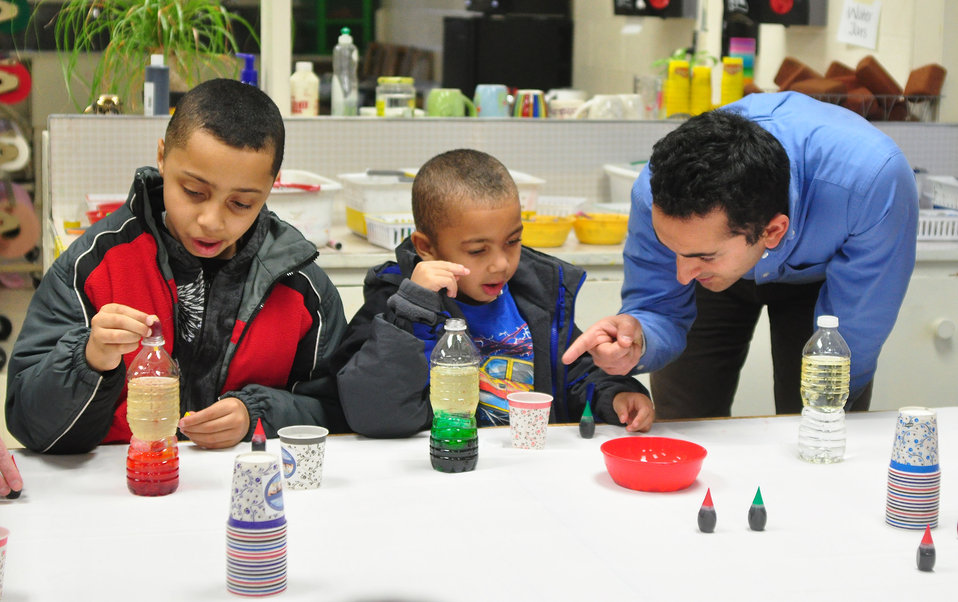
Woodland School STEM Night Oak Ridge 2014

14-013 DOE photo Lynn Freeny 1-23-2014 Oak Ridge Tennessee